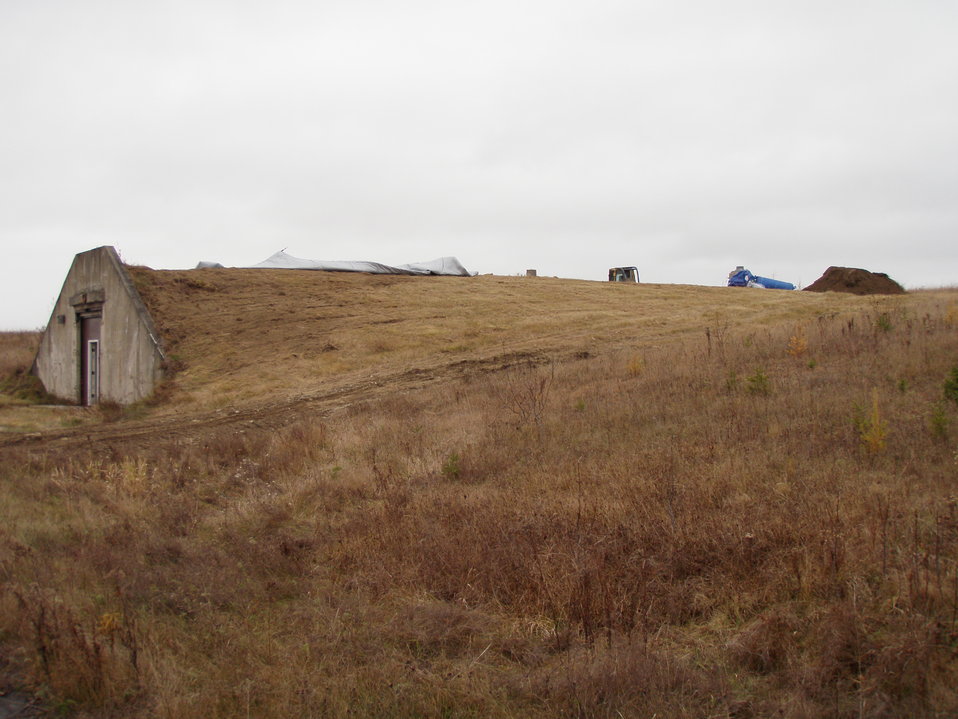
Installation of thermal mat to the top of the bunker